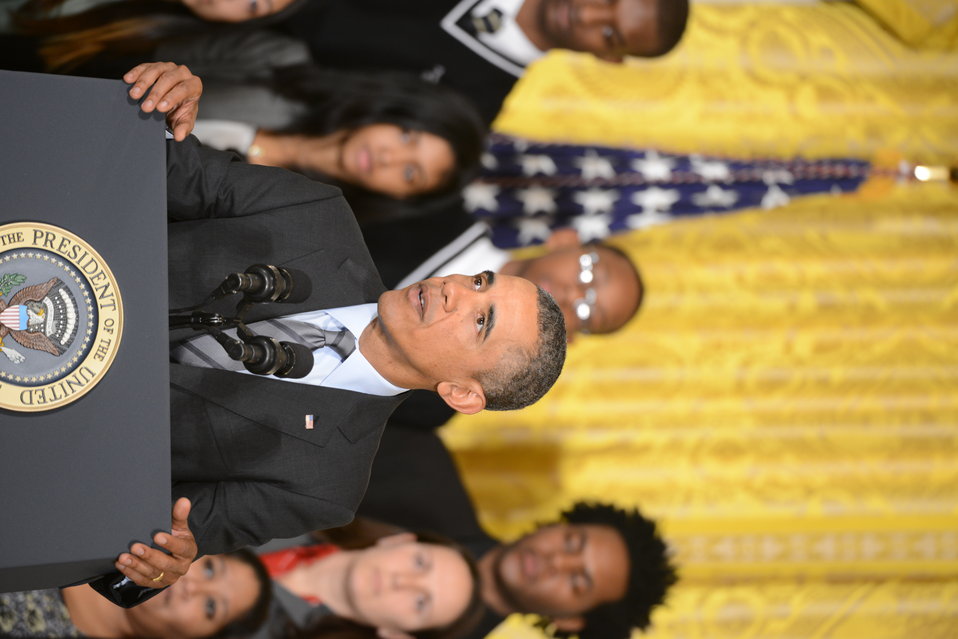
President Barack Obama announces the first five “Promise Zones,” located in San Antonio, TX, Philadelphia, PA, Los Angeles, CA, Southeastern Kentucky, and the Choctaw Nation of Oklahoma.